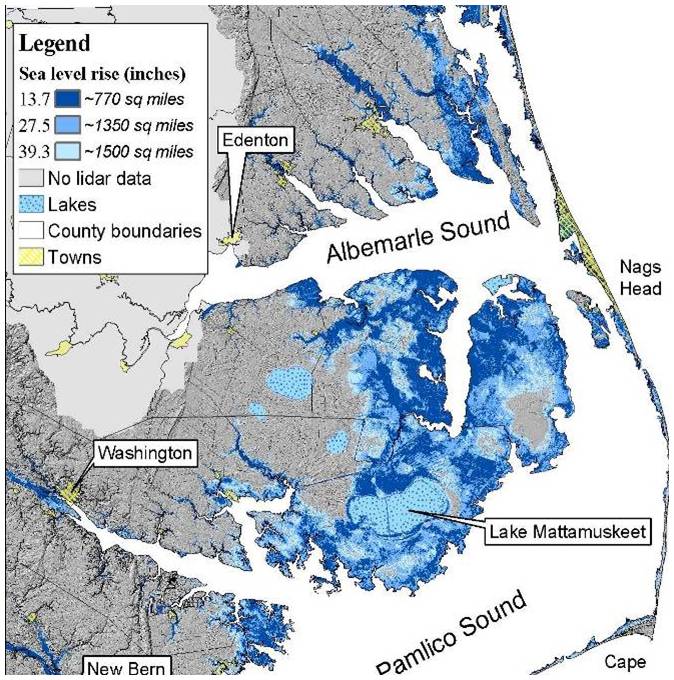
Sea level projections at Alligator River National Wildlife Refuge

Relative sea-level rise has been two inches per decade. At the present rate, all the blue areas will be inundated in 200 years. Alligator River National Wildlife Refuge is the peninsula on the mainland behind Nags Head.